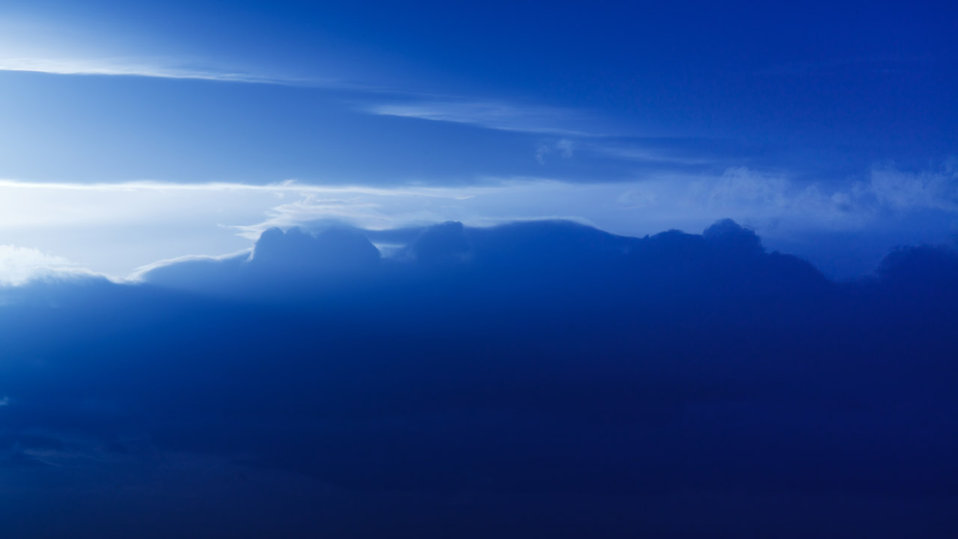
Dark blue sky background image.